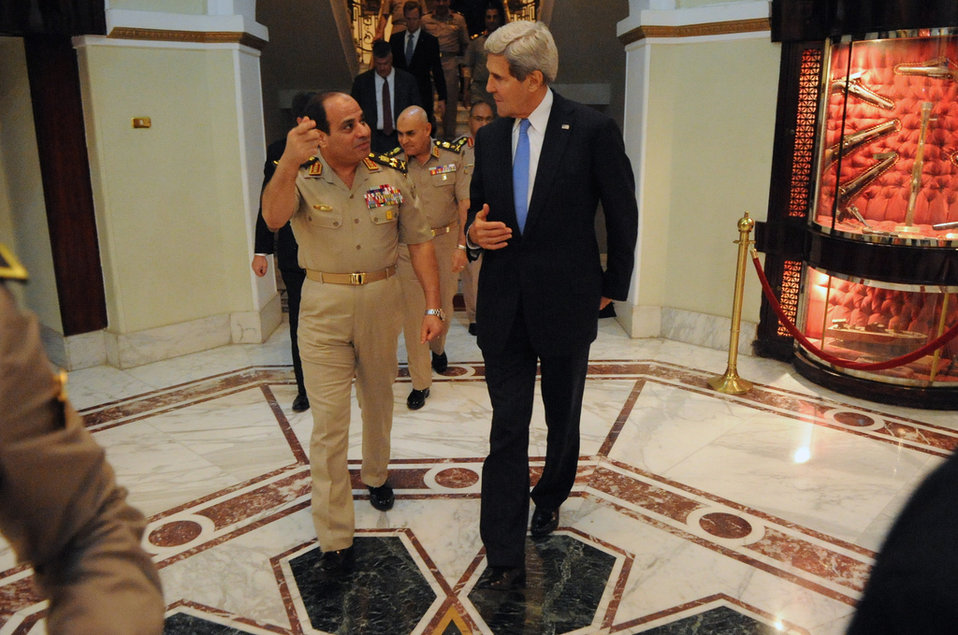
Secretary Kerry Bids Farewell to Egyptian Defense Minister General al-Sisi

Egyptian Minister of Defense General Abdul Fatah Khalil al-Sisi bids farewell to U.S. Secretary of State John Kerry after a meeting in Cairo, Egypt, on November 3, 2013.